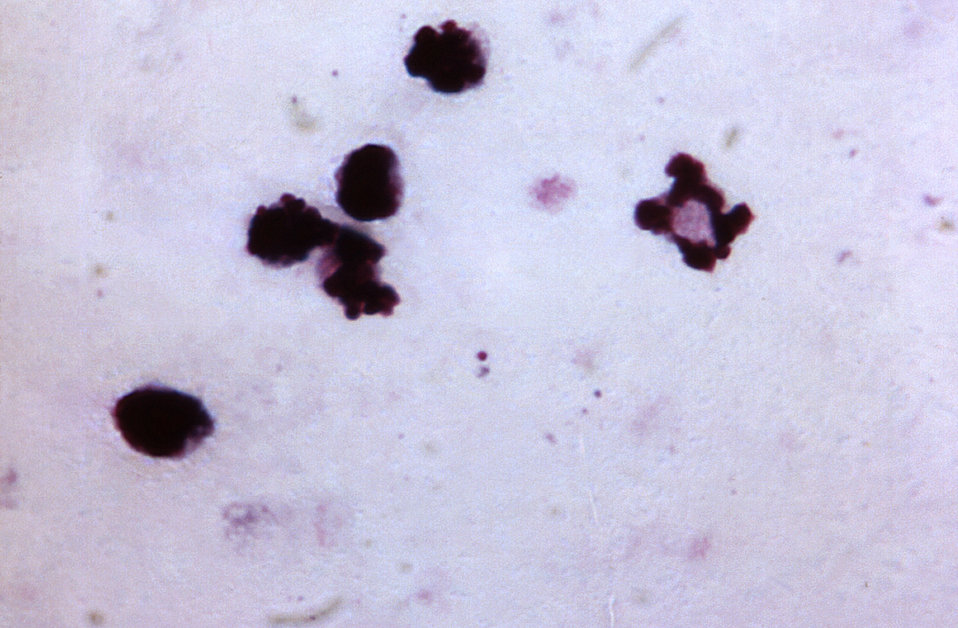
This thick film blood smear micrograph depicts a young, growing Plasmodium malariae trophozoite, which had just past its ring-stage in its maturation process.